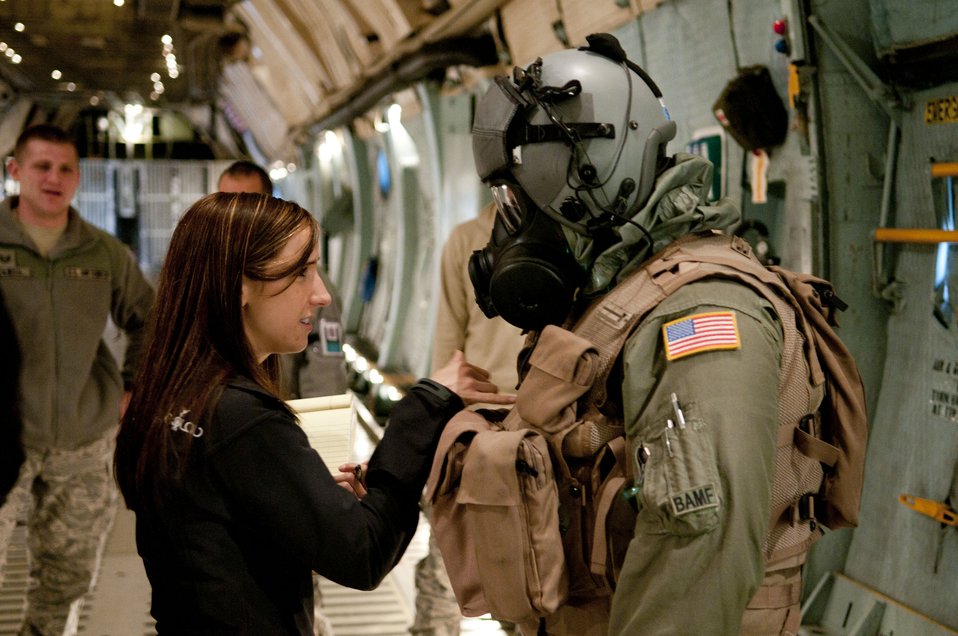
167th AW provides testing ground for mask development

Erin Kennedy, a chemical engineer for the Army and the Joint Service Aircrew Mask-Fixed Wing Research Team test and evaluation lead, gets feedback from Tech. Sgt. Michael Lindamood during a field evaluation of the mask at the West Virginia Air National Guard in Martinsburg, W.Va., Dec. 7, 2011. The Department of Defense research team had aircrew in each of the flying positions don the mask and accompanying gear and perform their duties on a C-5 Galaxy aircraft.